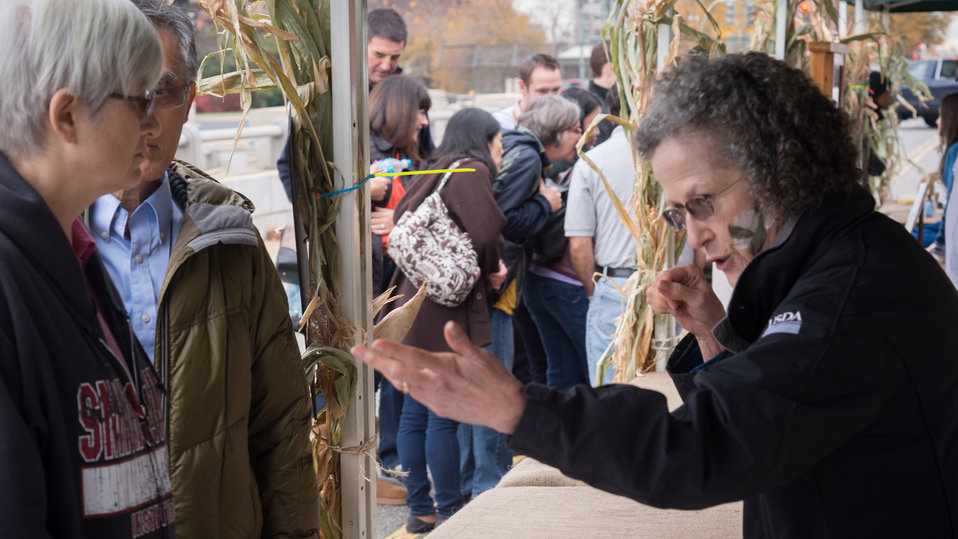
U.S. Department of Agriculture (USDA), National Organic Program, Agricultural Marketing Specialist and USDA Executive Master Gardener Lee Cliburn talks about spinning cotton into thread, during the final outdoor market and Harvest Festival at the USDA Whitten Building east parking lot in Washington, D.C., on Friday, November 22, 2013.